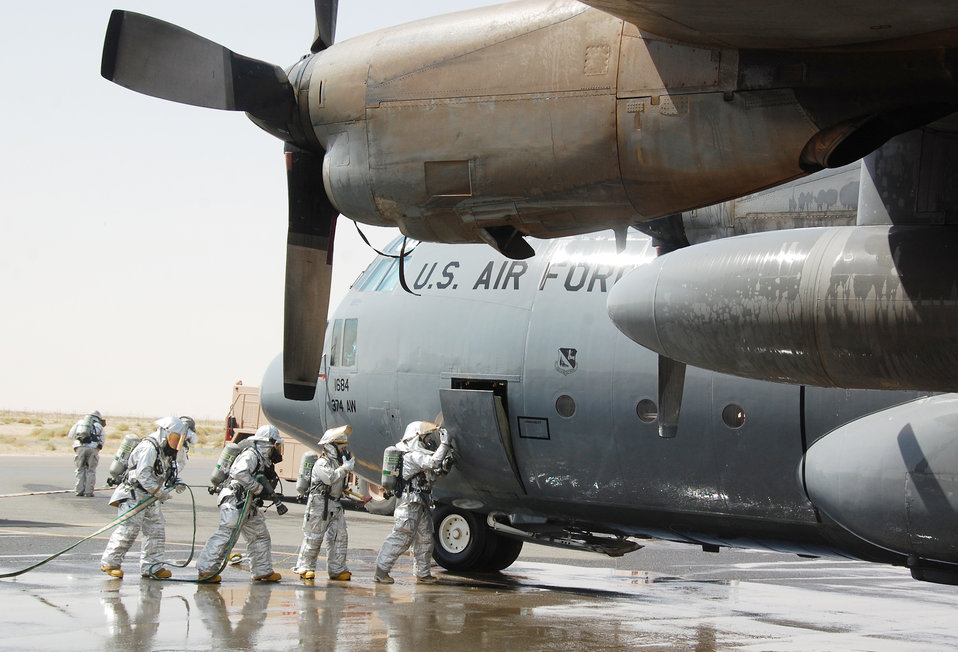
Time to evacuate

Firefighters with the 386th Expeditionary Civil Engineer Squadron demonstrate C-130 Hercules egress for local Boy Scouts and Cub Scouts March 13, 2010 as part of the scout's tour at an air base in Southwest Asia. The Scouts, who reside near the location, visited with various departments and ate lunch at the dining facility after the tour.